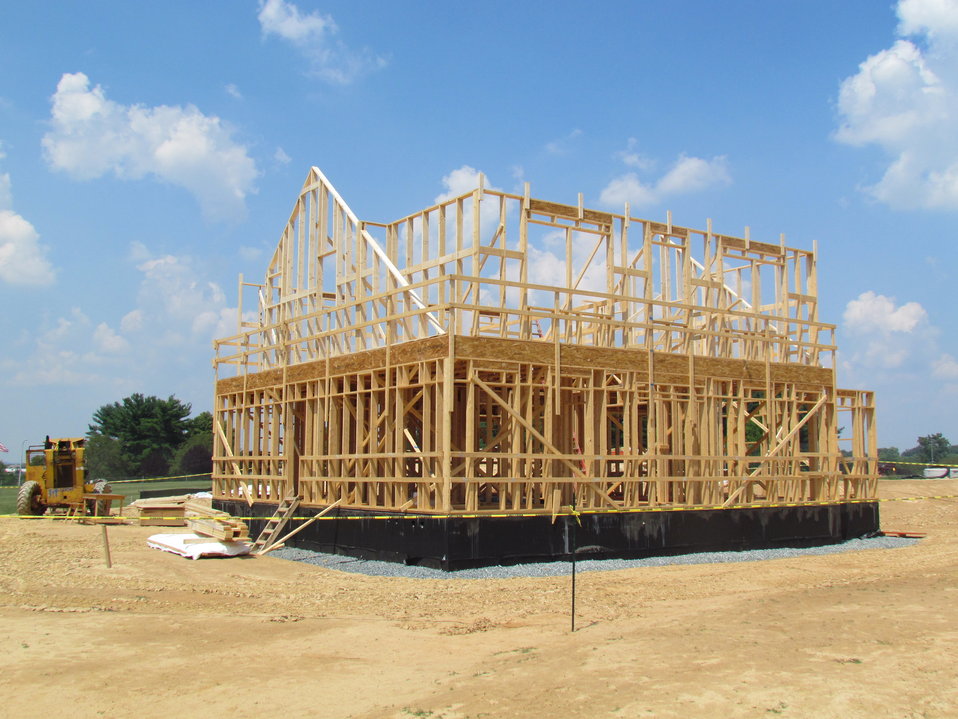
Net-Zero Energy Residential Test Facility - Picture showing construction of second floor wall framing being erected.